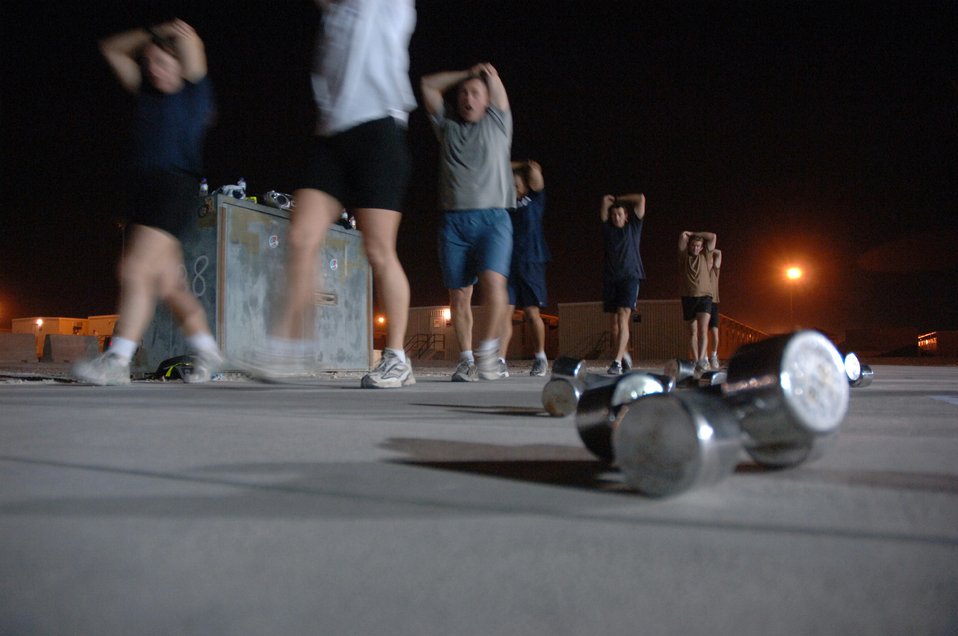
Operation Iraqi Freedom

SOUTHWEST ASIA (AFPN) -- Airmen from the United States, England and Australia participate in